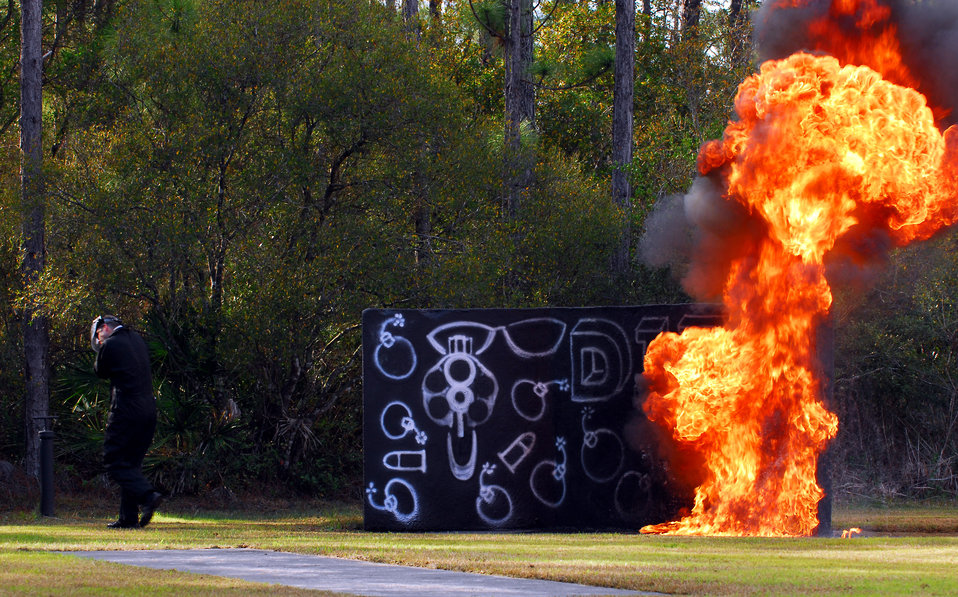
Having a dynamic time

Tech. Sgt. Brian Gilliland reacts to a Molotov cocktail bomb during the explosives effect demonstration Jan. 9 on the Dynamics of International Terrorism range at Hurlburt Field, Fla. The demonstration showed students the capabilities of weapons primarily used by terrorist groups. Students from all branches of the U.S. military participated in the course. Sergeant Gilliland is assigned to the Air Force Special Operations School.